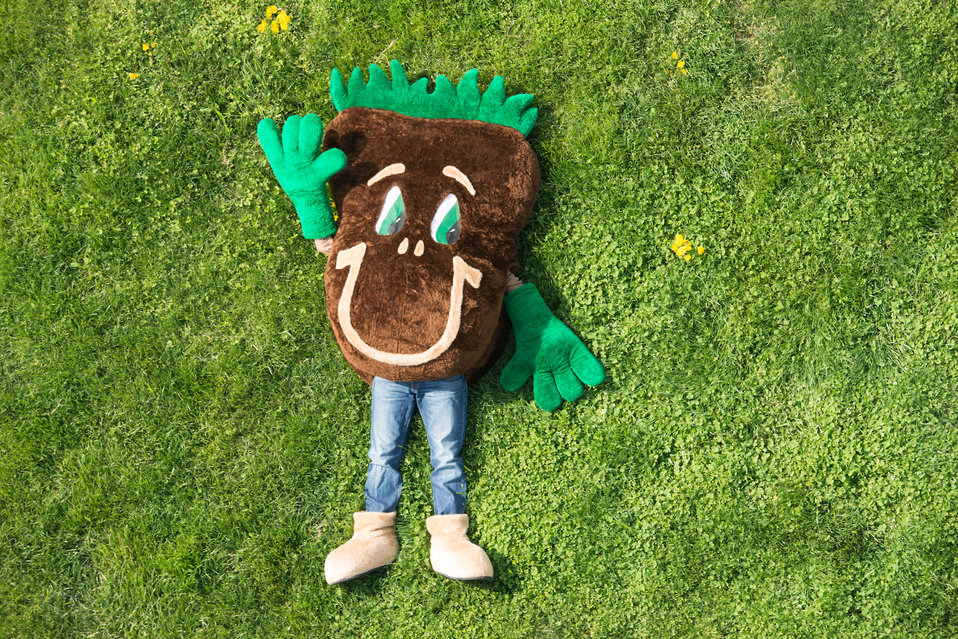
The U.S. Department of Agriculture’s (USDA) Natural Resources Conservation Service (NRCS) mascot Sammy Soil on the Sunny Ridge Farm in Laytonsville, MD on Monday, Apr. 28, 2014. The Sunny Ridge Farm owned by the Stabler family uses a number of conservation practices to promote soil health and water quality. No-till cropping systems use cover crops that help water soak deep into the soil and machines work lightly on top of the soil preserving vertical pores that are water’s pipeline to the roots. Cover crops prevent erosion, improve soil health, hold water, supply nutrients, and suppress weeds and pests. Fenced waterways keep livestock away from the streams and drainage to low points of fields, which allows grass, trees and other vegetation to grow. The plants take up nutrients from the livestock effluent, reducing pollution to waterways. The farm also has a well-designed agrichemical facility for an environmentally safe area to handle and store tanks of on-farm chemicals.